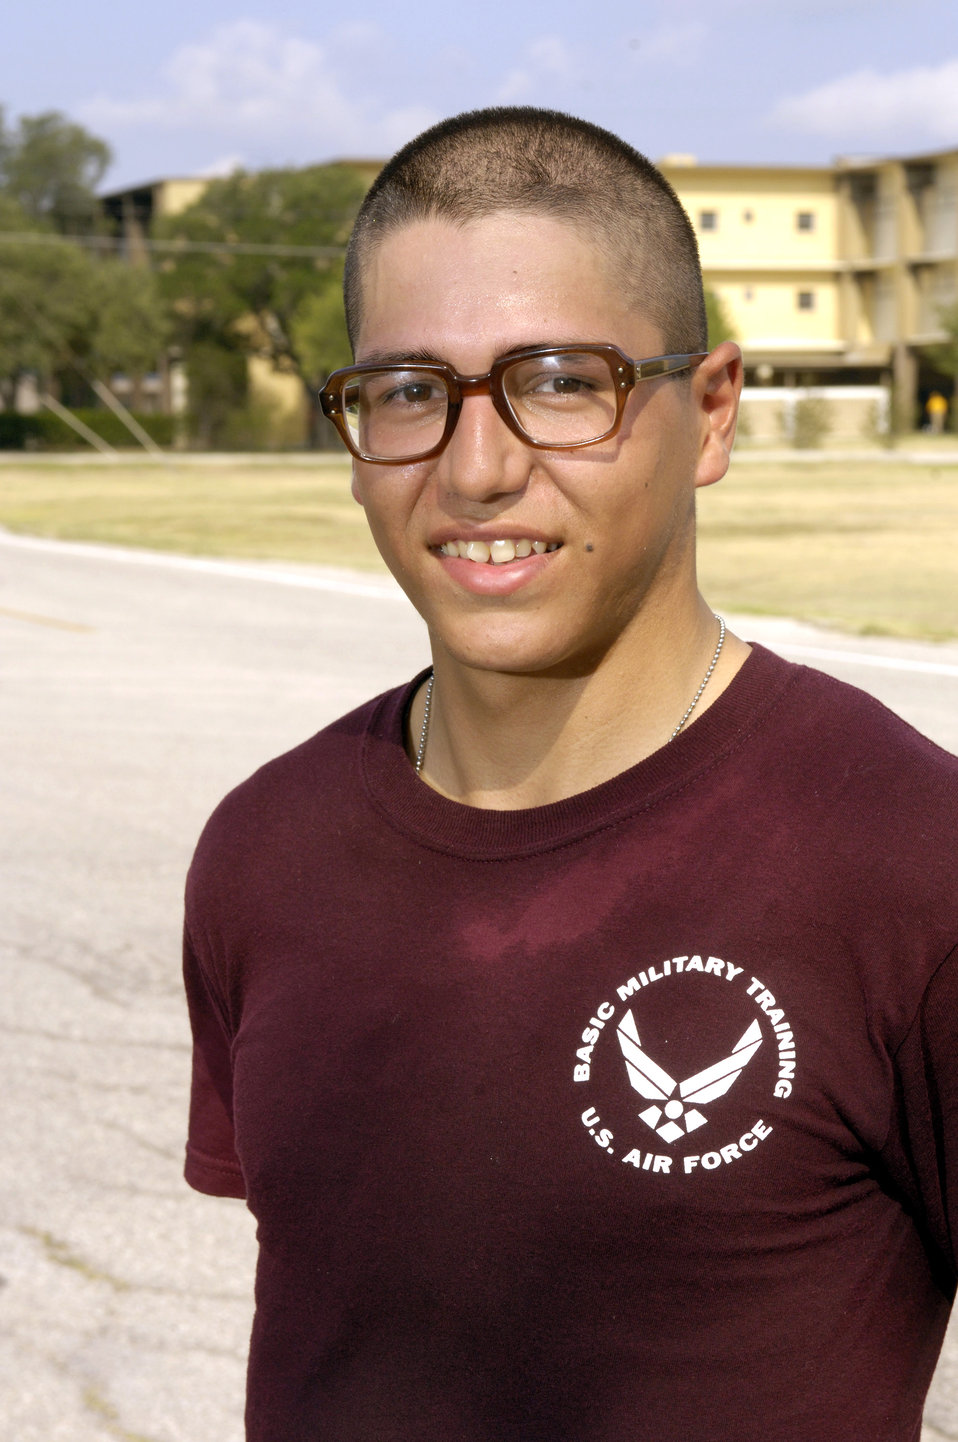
Basic training grads say 4th of July feels different now

Airman Nova Noon graduated from basic military training at Lackland Air Force Base, Texas, on Friday, June 30. After finishing a two-and-one-half-mile run on June 29, the Airman said the Fourth of July holiday makes him feel patriotic. He will soon enter training to become an aircraft loadmaster.